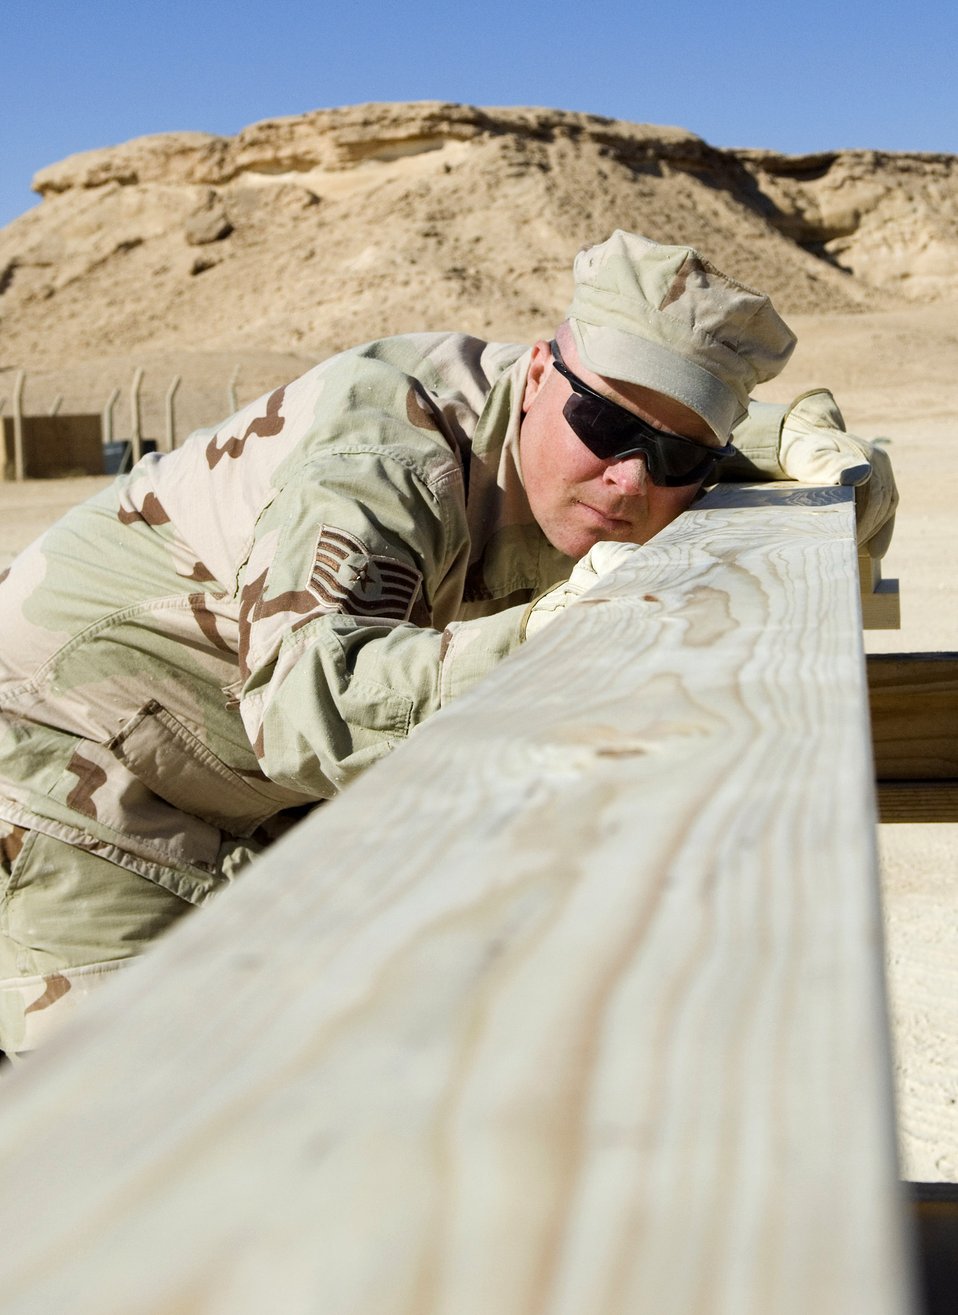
Air Force engineers improve Marine quality of life in Iraq

Tech. Sgt. Chris Collins lines up a 2-by-6 board to saw it to size Nov. 24 at Al Asad Air Base, Iraq. The wood he is cutting will be used to frame a bench inside the small-arms classroom his team built for the Marines. REDHORSE Airmen are performing